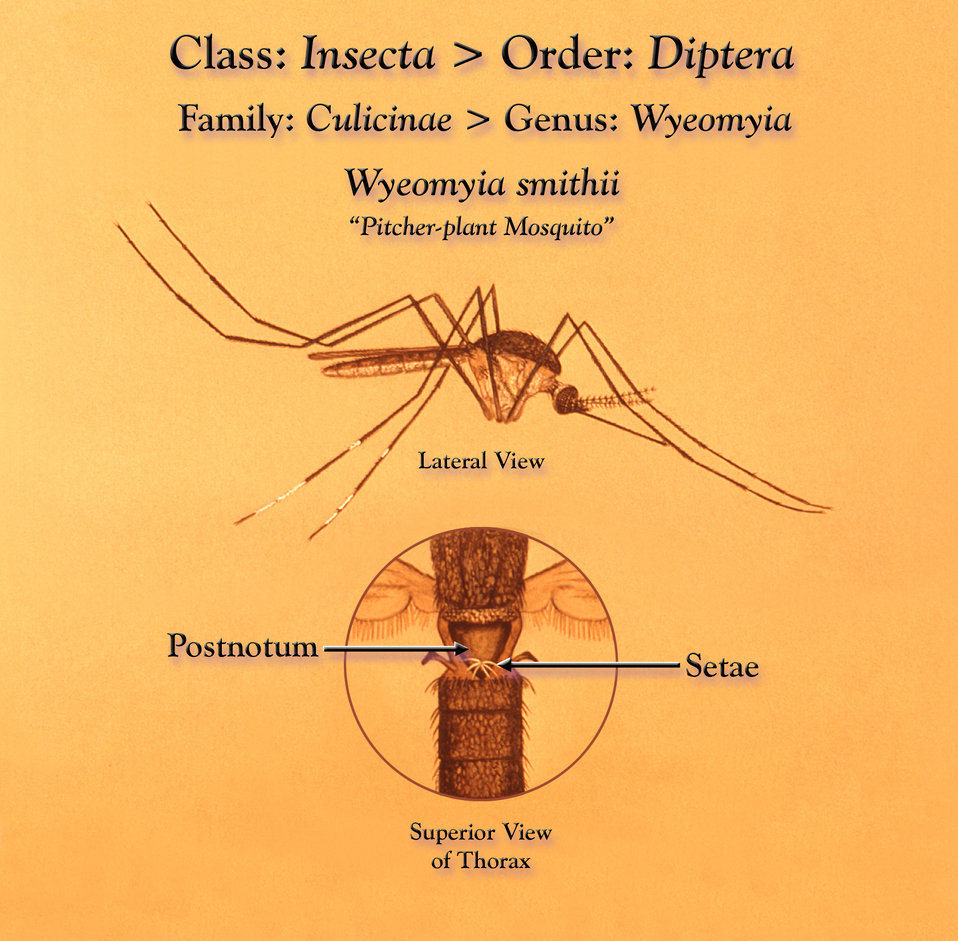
This illustration depicts a 'pitcher-plant', Wyeomyia smithii mosquito from a lateral view, as well as an enlarged inset highlighting its mesonotum, and its postnotal tuft of seta.